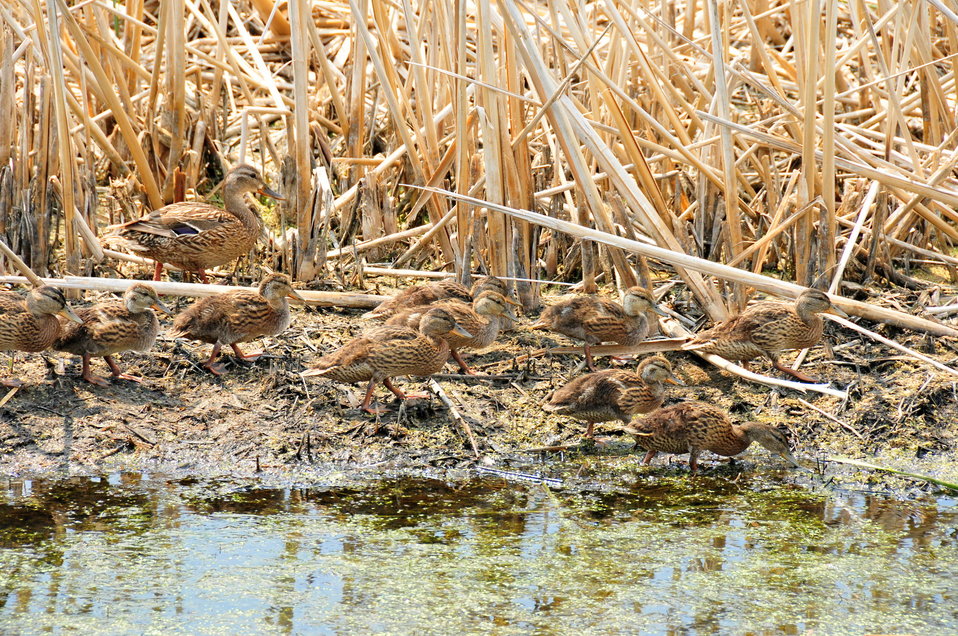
Mallard Hen and Brood on Sand Lake NWR